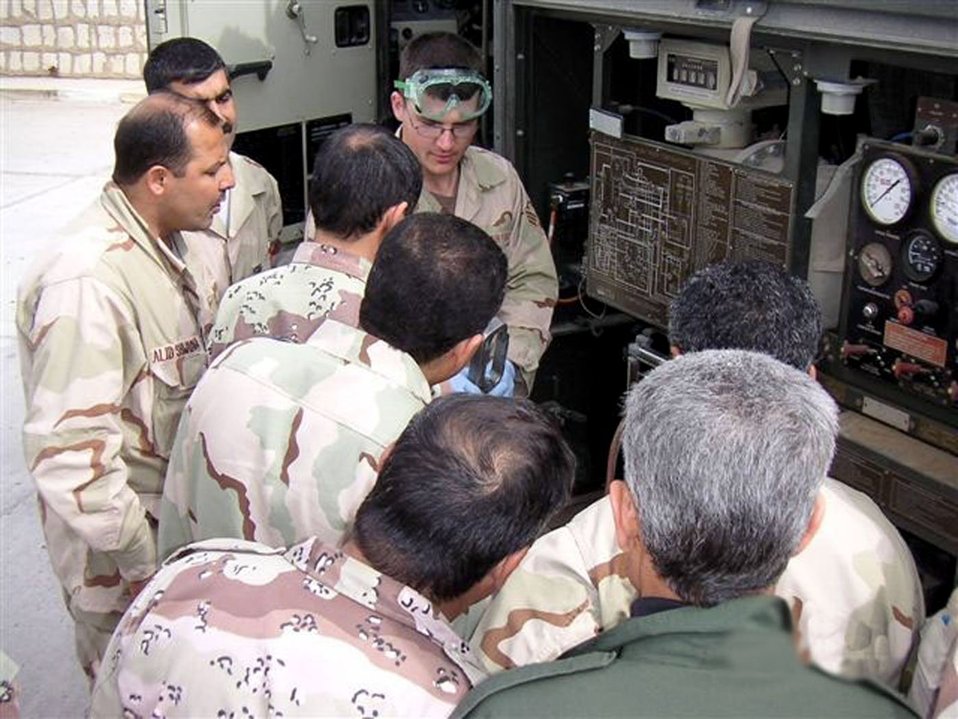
Fuels Airmen train Iraqi Air Force

Senior Airman Keith Handley instructs members of the Iraqi Air Force on the procedures for testing aviation fuel at Kirkuk Air Base, Iraq. Airman Handley is with the 506th Expeditionary Logistics Readiness Squadron fuels flight.